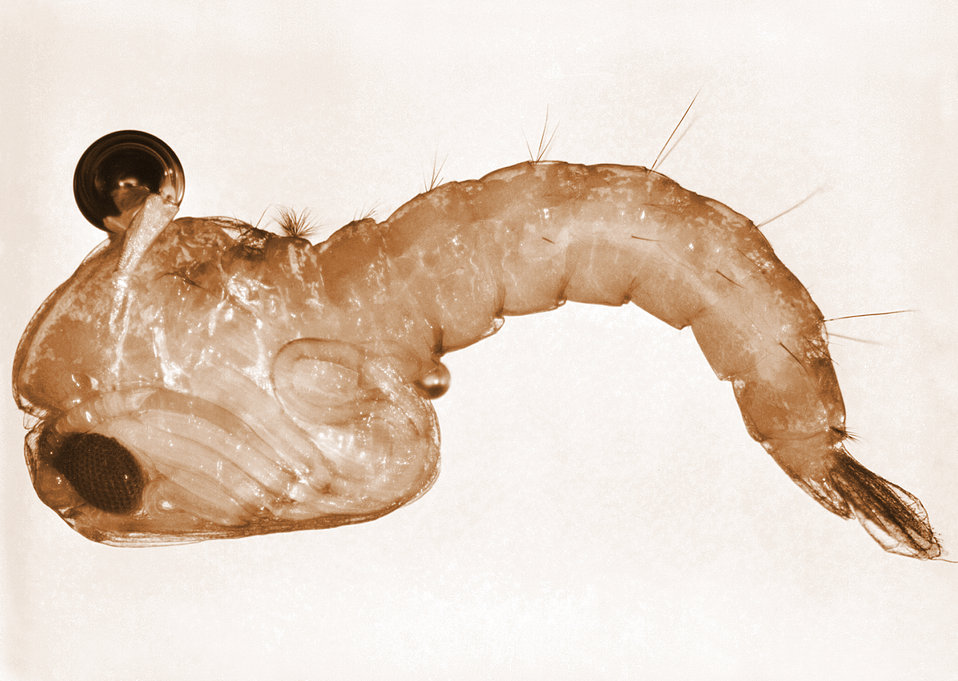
This photograph depicts an Anopheles stephensi mosquito pupa. The adult A. stephensi female, is a known vector for the disease malaria.